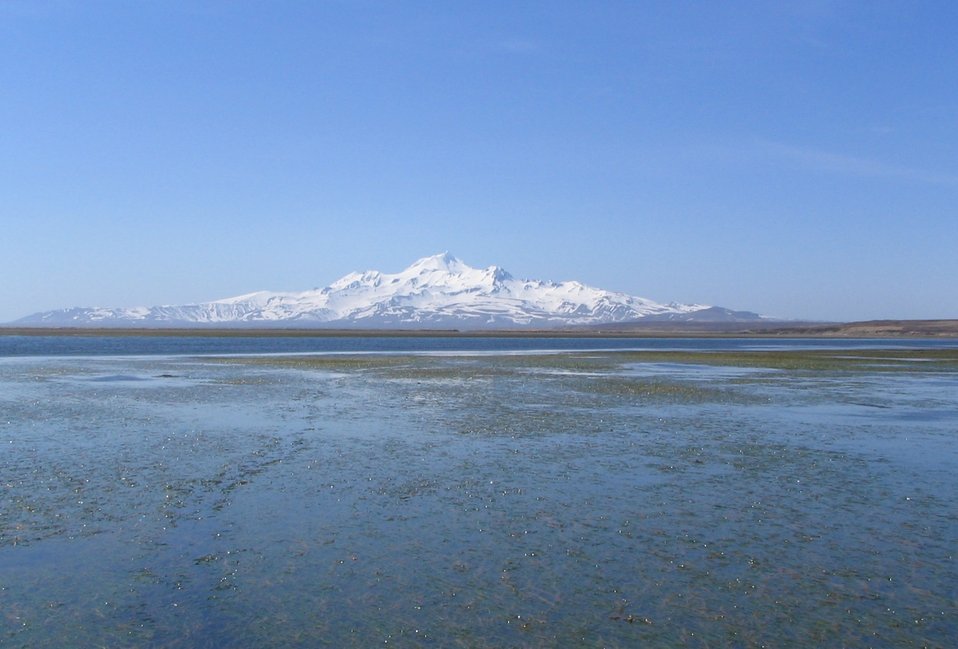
View of Frosty Peak

Kinzarof Lagoon, Izembek National Wildlife Refuge